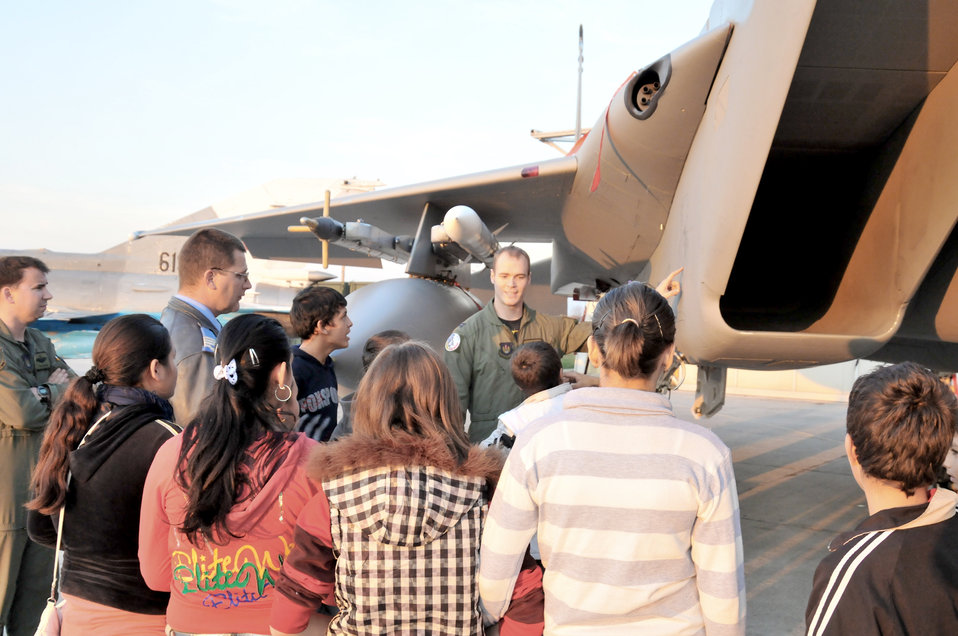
Games PB

Capt. Neils Barner describes an F-15C Eagle to a group of Romanian school children Nov. 5, 2010, at Campia Turzii Air Base, Romania. The children visited from a local youth center where Airmen had volunteered to play games and perform repairs. Captain Barner is a pilot with the 493rd Fighter Squadron.